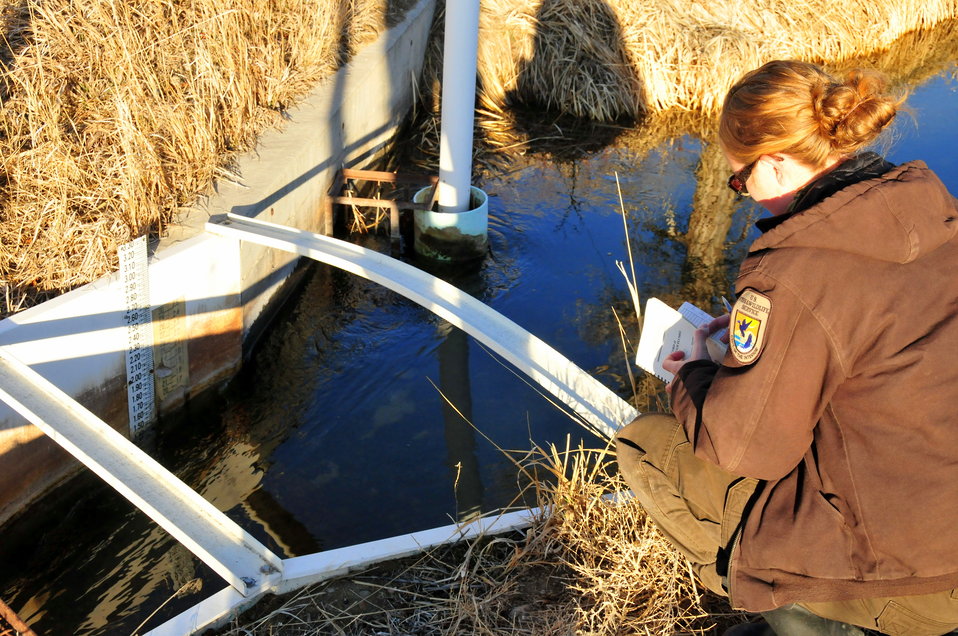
Documenting Water Use at Seedskadee NWR

Wildlife Refuge Specialist recording water measurements from a Parshall Flume. Information is used to document amount of water used for wetland management purposes.